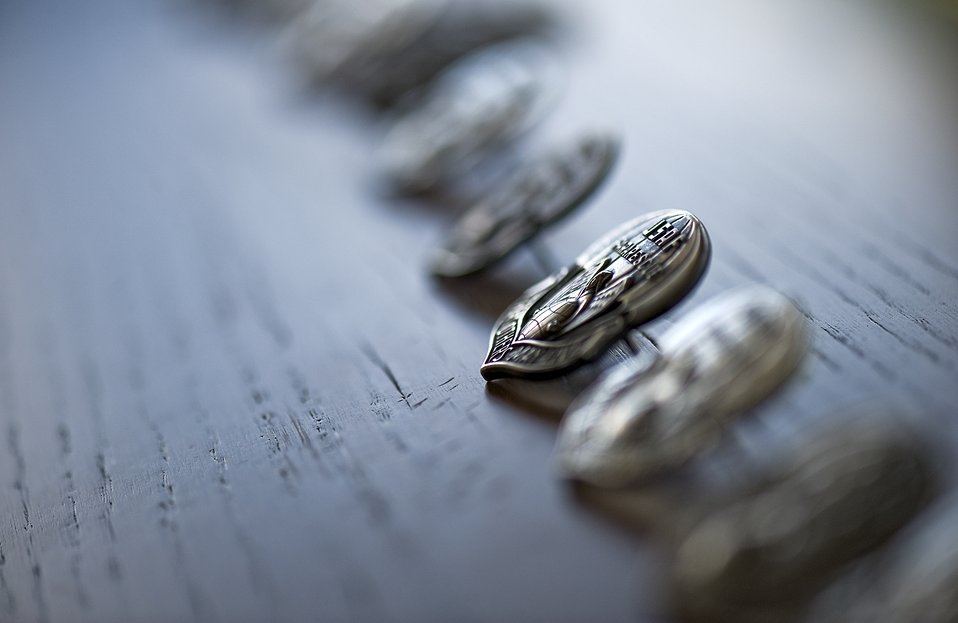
PJ Memorial Service

Pararescue beret flashes line the top of the casket of Tech. Sgt. Michael Flores who was killed in Afghanistan June 9. The flash which represents the